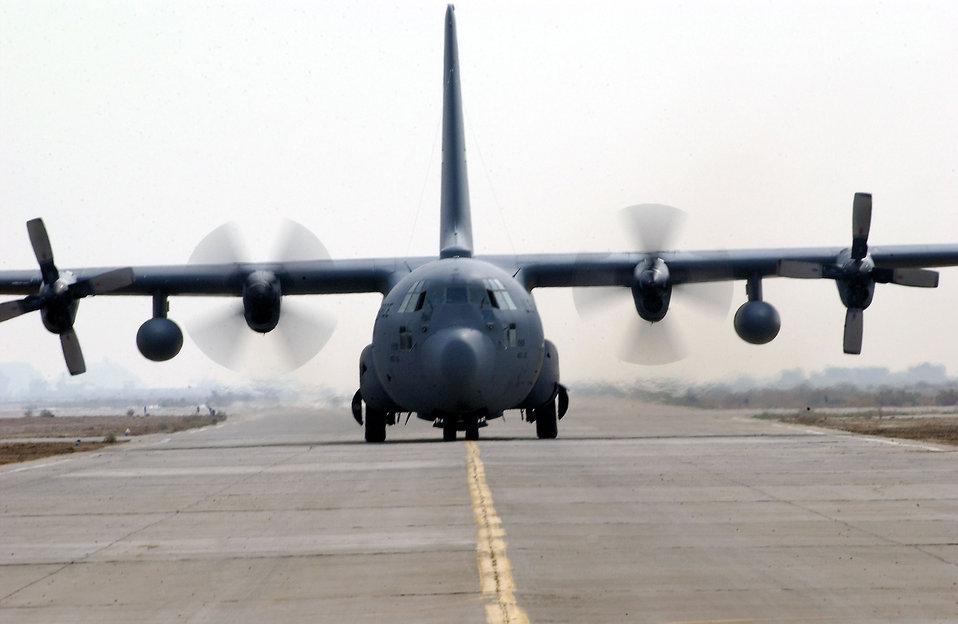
Hercules taxi

TALLIL AIR BASE, Iraq -- A C-130 Hercules taxis on the flightline here after a mission Feb. 22.